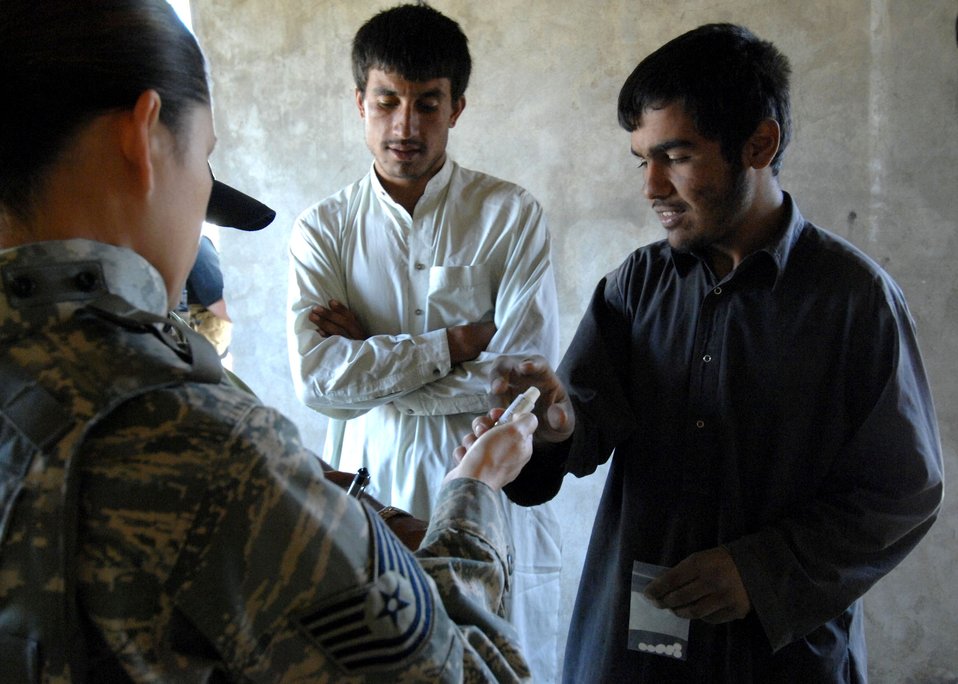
Medical mission provides care in Afghanistan

Tech. Sgt. Joy Flumerfelt provides medicine to local Afghanistan villigers Oct. 4 during a medical civil action project near Bagram Air Base, Afghanistan. Sergeant Flumerfelt is a medical technician with the 455th Air Expeditionary Wing.